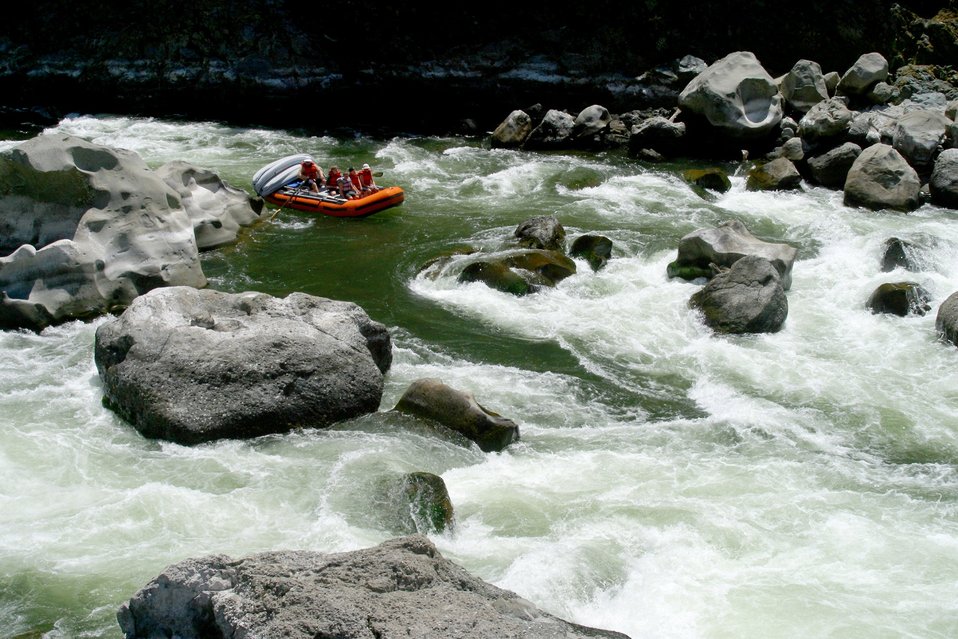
Blossom Rapids.